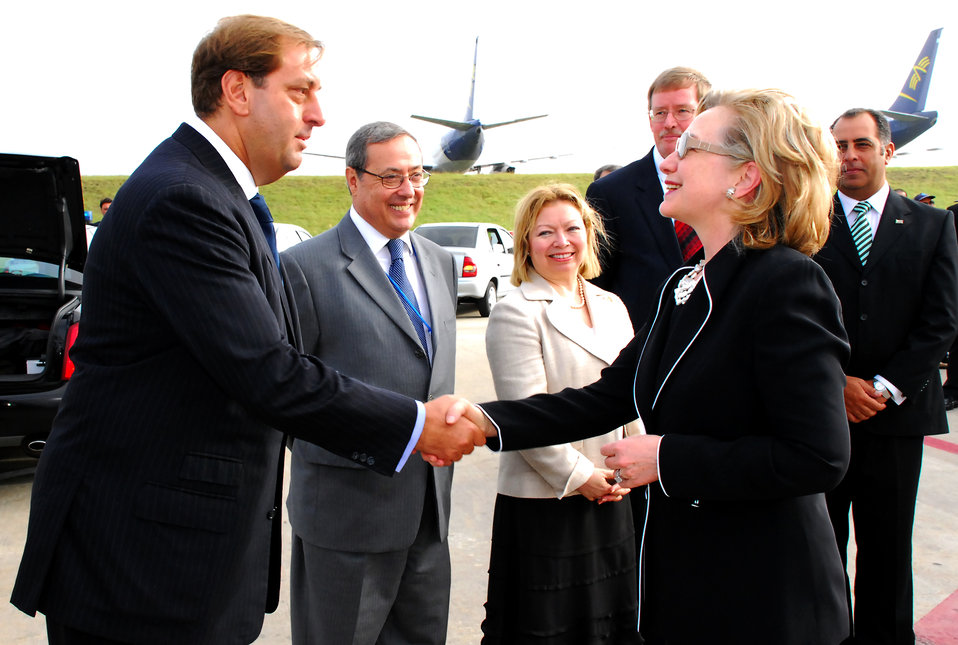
Secretary Clinton Arrives in Montevideo, Uruguay

U.S. Secretary of State Hillary Rodham Clinton arrives in Montevideo, Uruguay March 1, 2010.